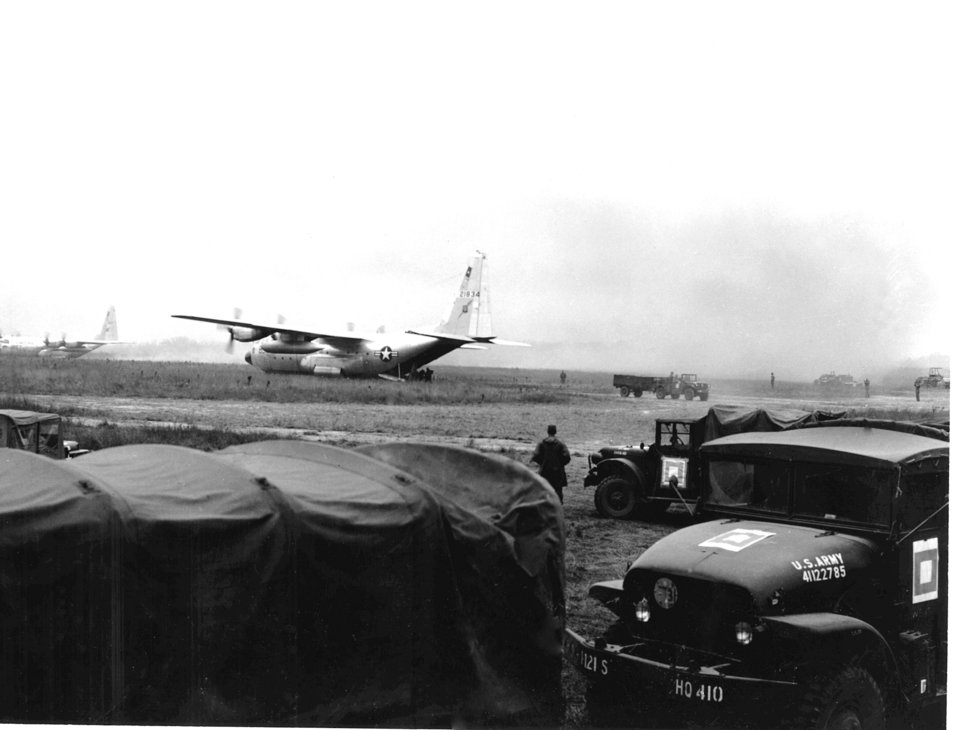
C-130

1960s -- C-130 airlift aircraft from Tactical Air Command carry out operations on a forward dirt assault landing zone, bringing in supplies and equipment for forces in U.S. Strike Command's Joint Exercise GoldFire I. First Infantry Division trucks in the foreground, previously flown in, are typical of cargo carried in these aircraft during the exercise.